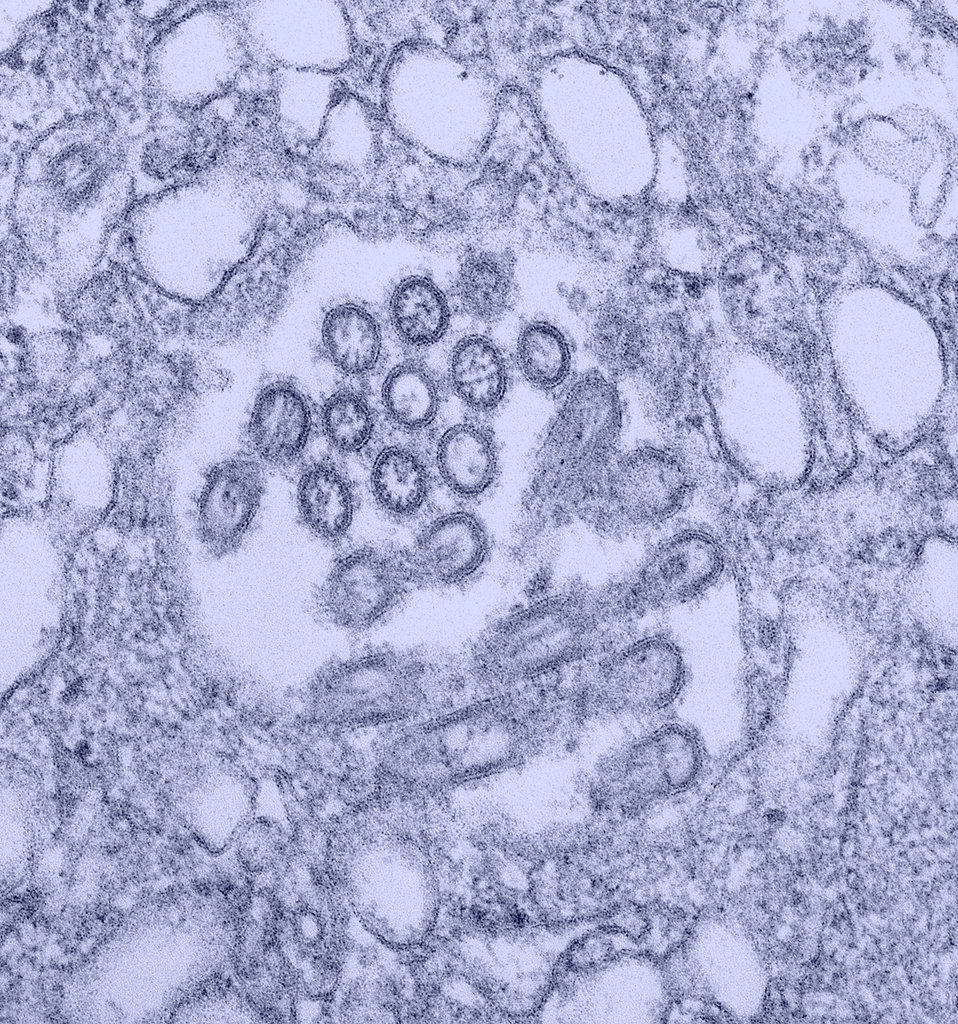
This colorized transmission electron micrograph (TEM) revealed the presence of a number of Novel H1N1 virus virions in this tissue culture sample.